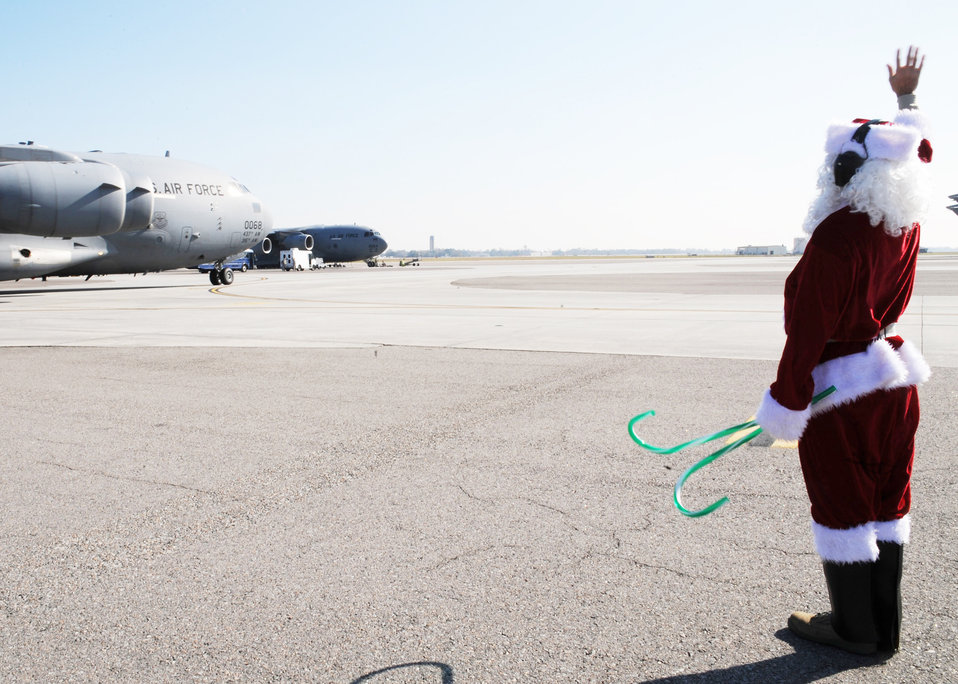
Santa Claus, friends welcome C-17

Santa, known as Maj. Aaron Sasson, .waves to the aircrew of a C-17 Globemaster III on the flightline at Charleston Air Force Base, S.C., Dec. 22, 2009. Major Sasson is the operations officer for the 437 Aircraft Maintenance Squadron.